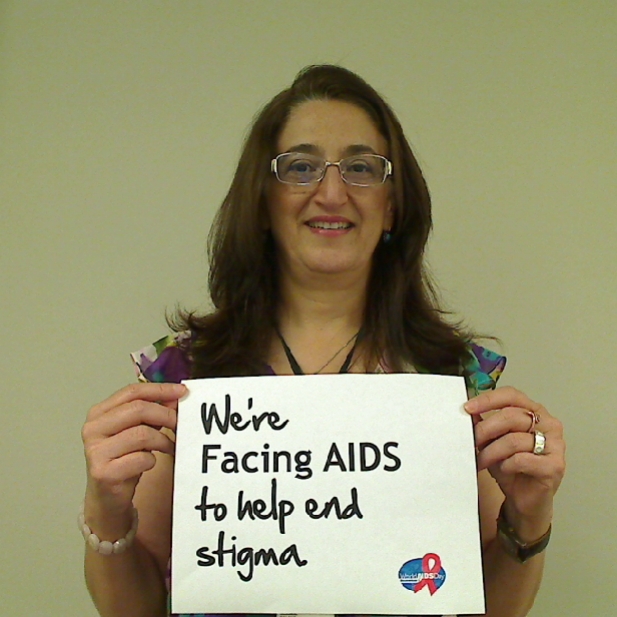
We're Facing AIDS to help end stigma.